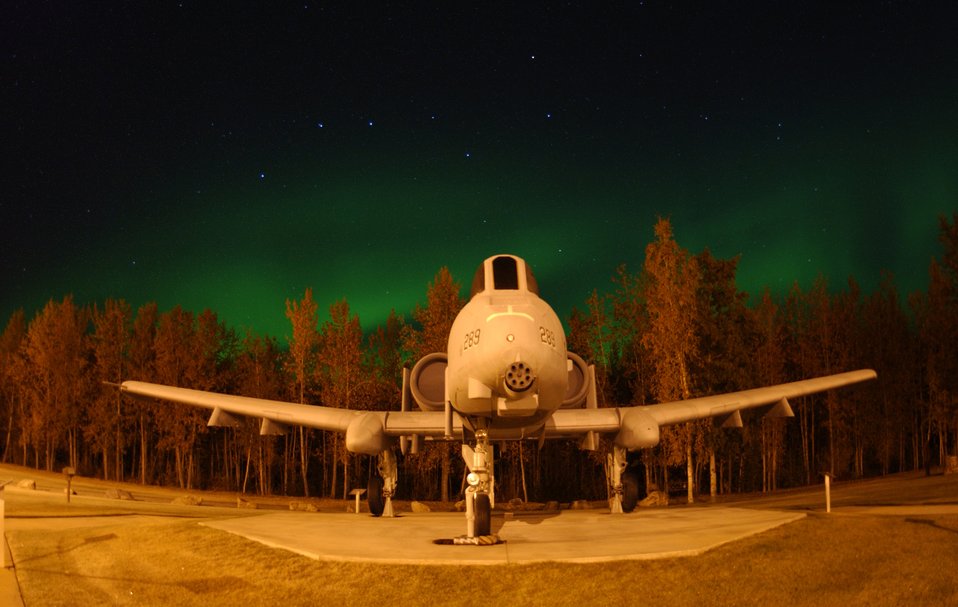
Lights in the sky

EIELSON AIR FORCE BASE, Alaska -- The Big Dipper constellation and the aurora borealis, or northern lights, shine above a static A-10 Thunderbolt ll here Sept. 18. The lights are the result of solar particles colliding with gases in Earth's atmosphere. Early Eskimos and Indians believed different legends about the northern lights such as they were the souls of animals dancing in the sky or the souls of fallen enemies trying to rise again.